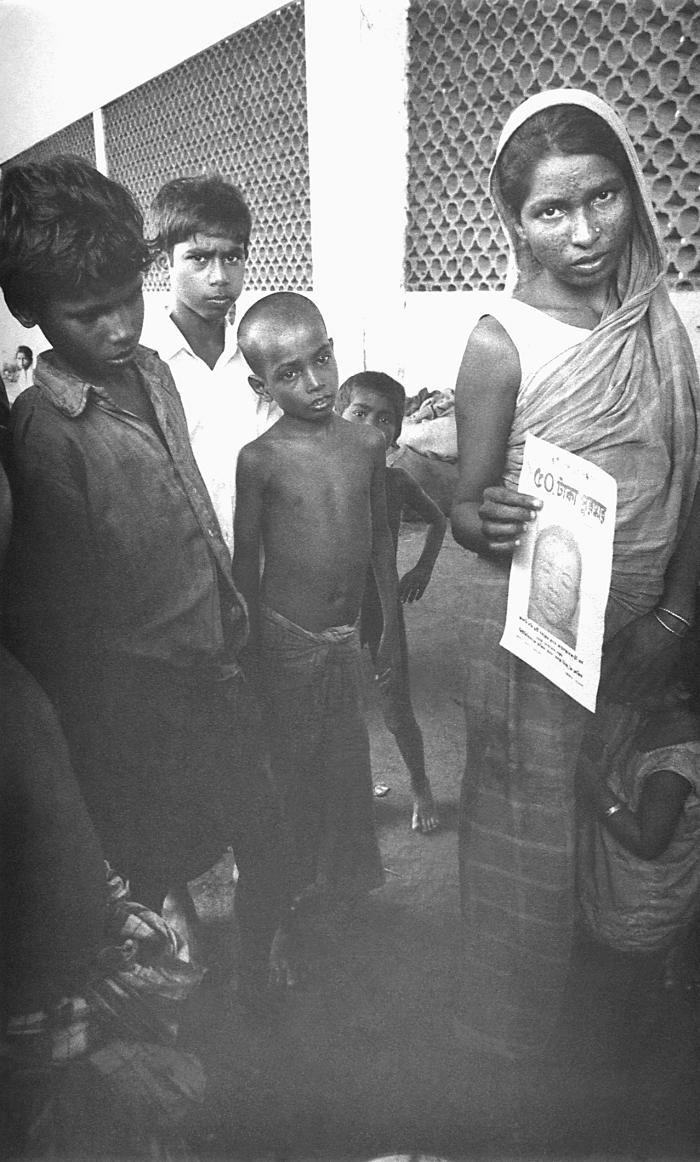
After discussing the salient points regarding the smallpox virus and its manifestations with this group of Bangladesh village residents, a smallpox eradication team member had left a leaflet with the woman at right, which depicted the face of a young smallpox sufferer. Note the scars on the woman's face from having battled the viral disease herself. Children were also included in these educational discussions and queries, concerning whether or not they too were aware of any possible cases. Possible cases were investigated by an epidemiologist who'd make a definitive diagnosis, and thereafter, prescribe appropriate medical treatments.